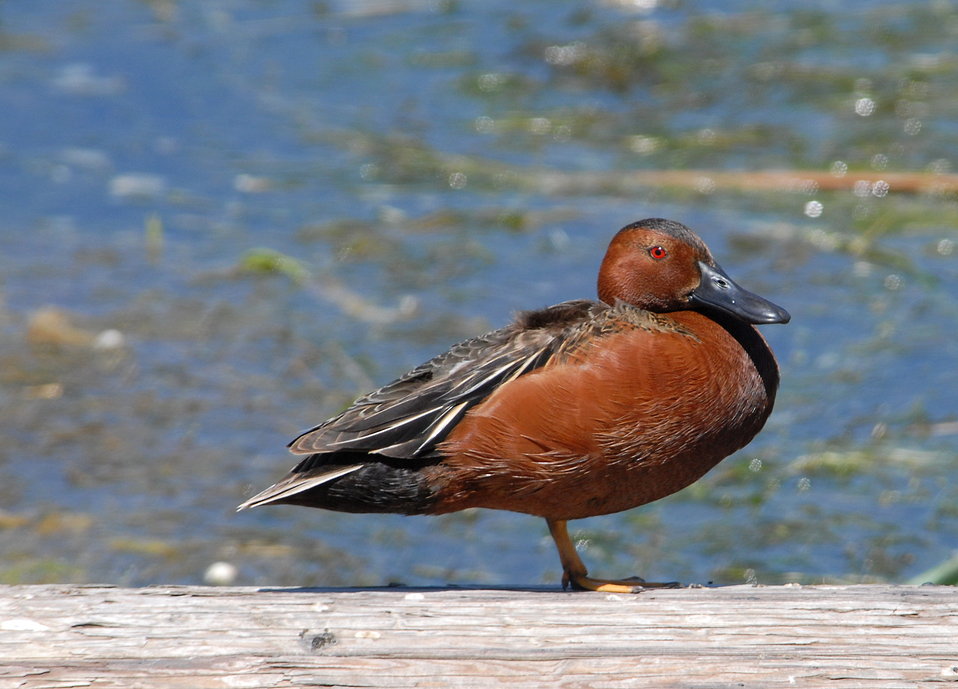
Cinnamon Teal (male)